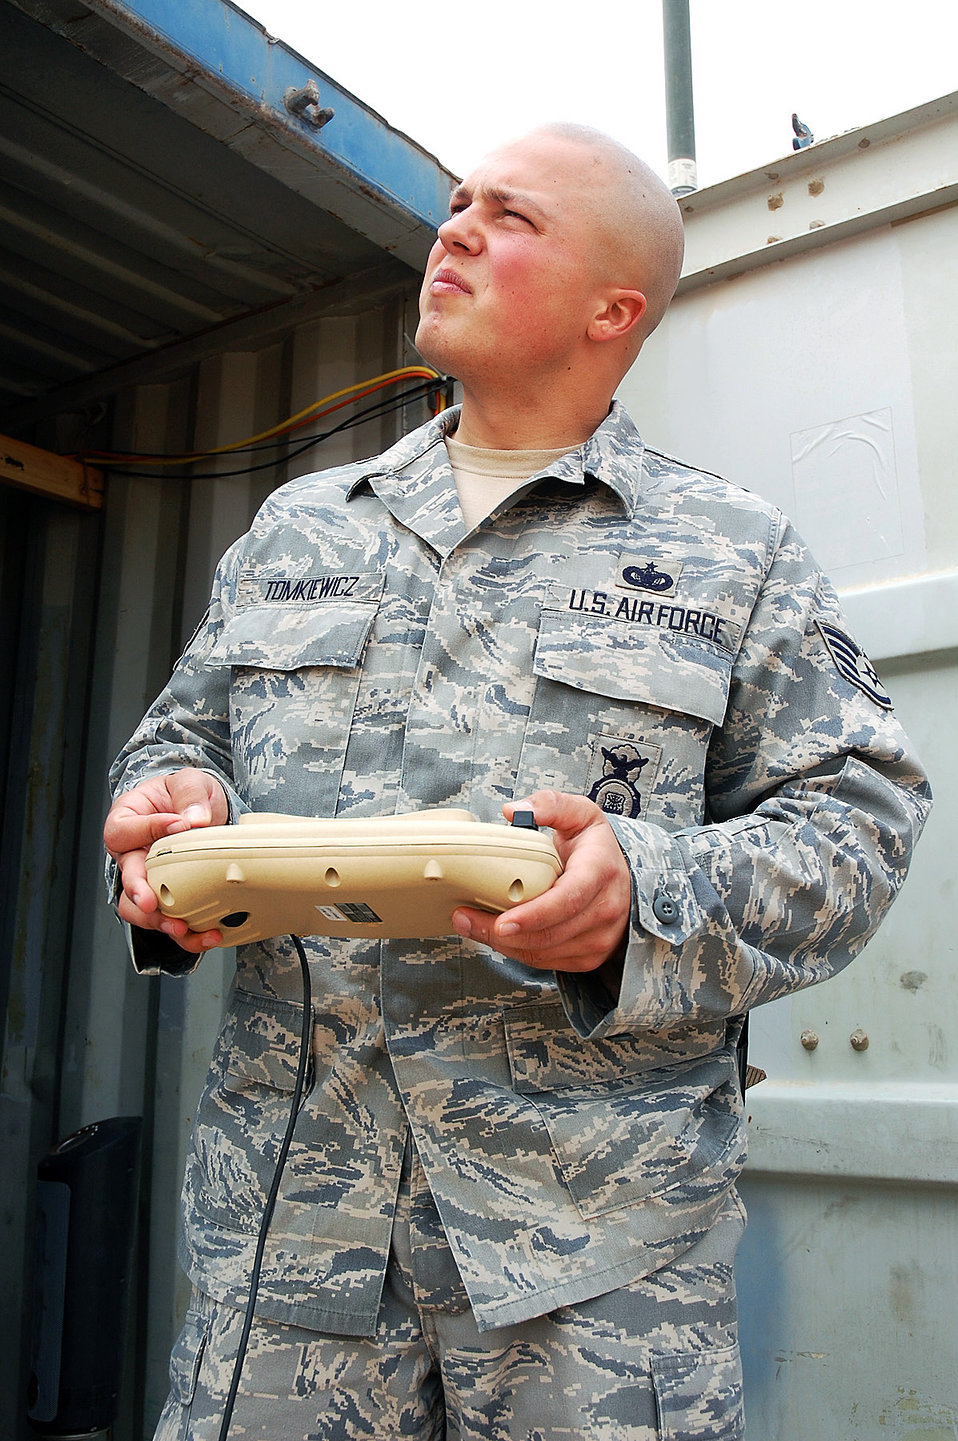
AF Raven B operators maintain 'eyes-on' for ground forces

Staff Sgt. Jeff Tomkiewicz scans the sky as he brings an RQ-11B in for a landing at Camp Bucca's Burge Field in Iraq Feb. 25. Sergeant Tomkiewicz is an 887th Expeditionary Security Forces Squadron Raven B operator and was a military working dog handler before being chosen to fly small unmanned aerial systems for the 887th.